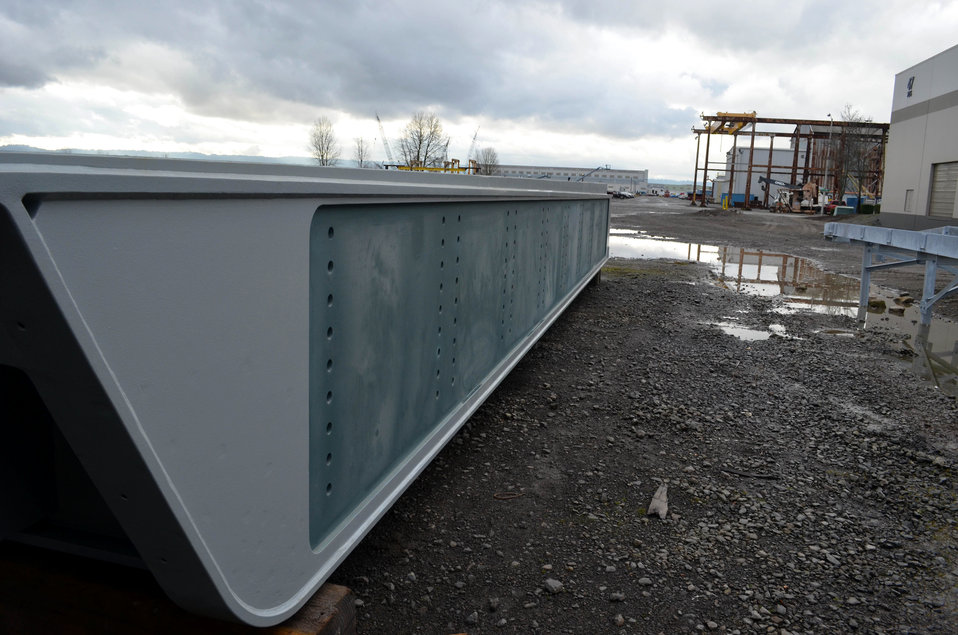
Giant Folsom spillway gates nearly ready for 600-mile journey to dam

A completed bulkhead gate, shown Jan. 31, 2014, stored at the Oregon Iron Works facility in Vancouver, Wash., has been painted with all-weather coating and is ready to be prepared for final delivery. The gate will be trucked more than 600 miles to Folsom Dam near Sacramento, Calif., where it will be installed on a new auxiliary spillway in 2014.